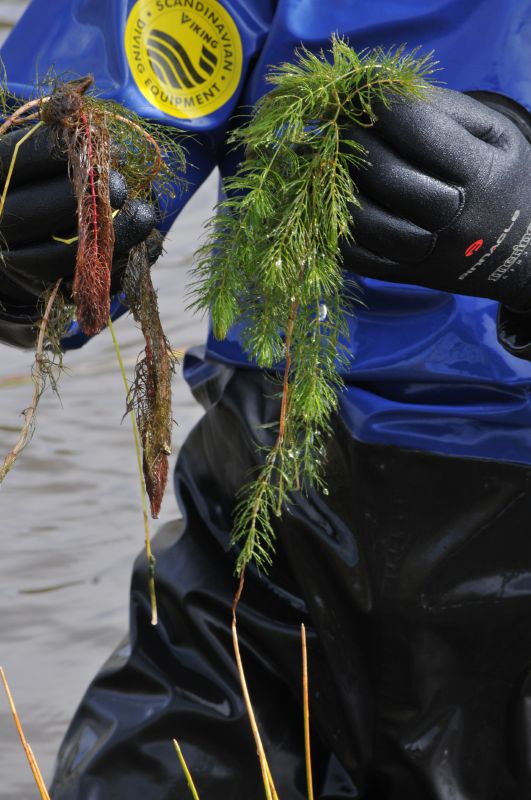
MARTIS CREEK LAKE, Calif. (Oct. 31, 2010) - Phil Caterino of the Tahoe Divers Conservancy holds invasive Eurasian watermilfoil plants here Oct. 31. Volunteers helped assemble and set sunlight barriers as part of a project to eradicate the plants from the lake bottom. The gas-permeable barriers kill the milfoil plants by blocking sunlight, but don't disturb other plant and animal species native to the lake. The Corps is partnering with the Tahoe Divers Conservancy on the project, funded by a $20,000 grant from the Community Foundation of Western Nevada's Truckee River Fund.